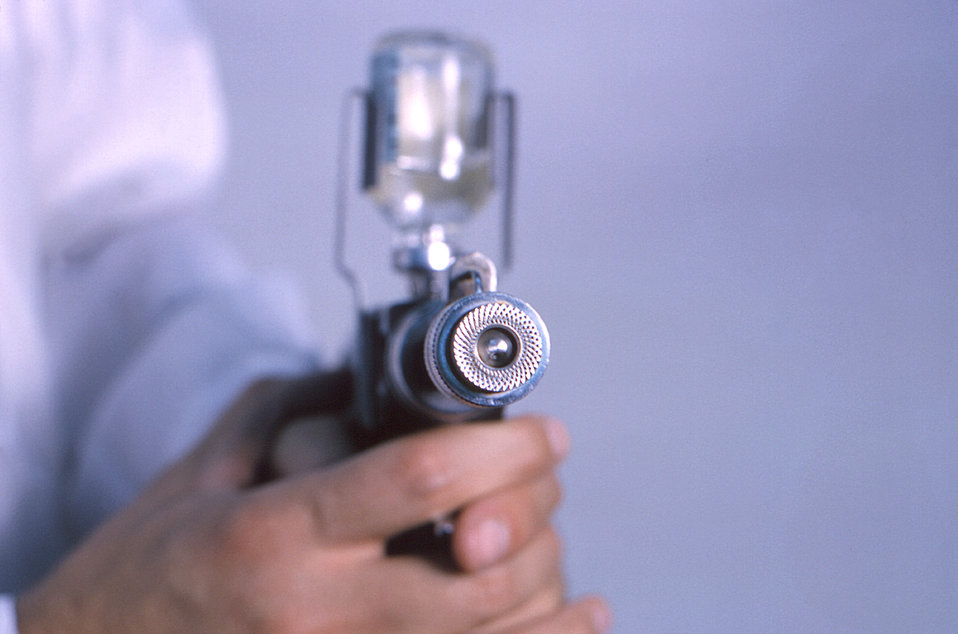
This historic 1965 photograph depicted a front-on view of a hand-held jet-injector, also known as a Ped-O-Jet. See PHIL 12147, which depicts one of these injectors, as it was put into practice.